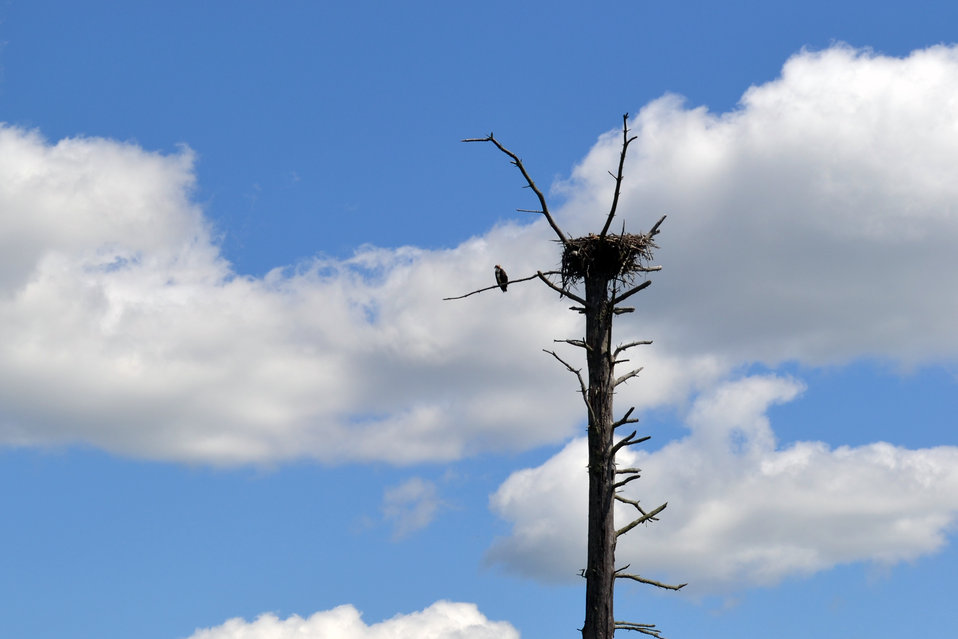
Osprey at Tamarac National Wildlife Refuge.